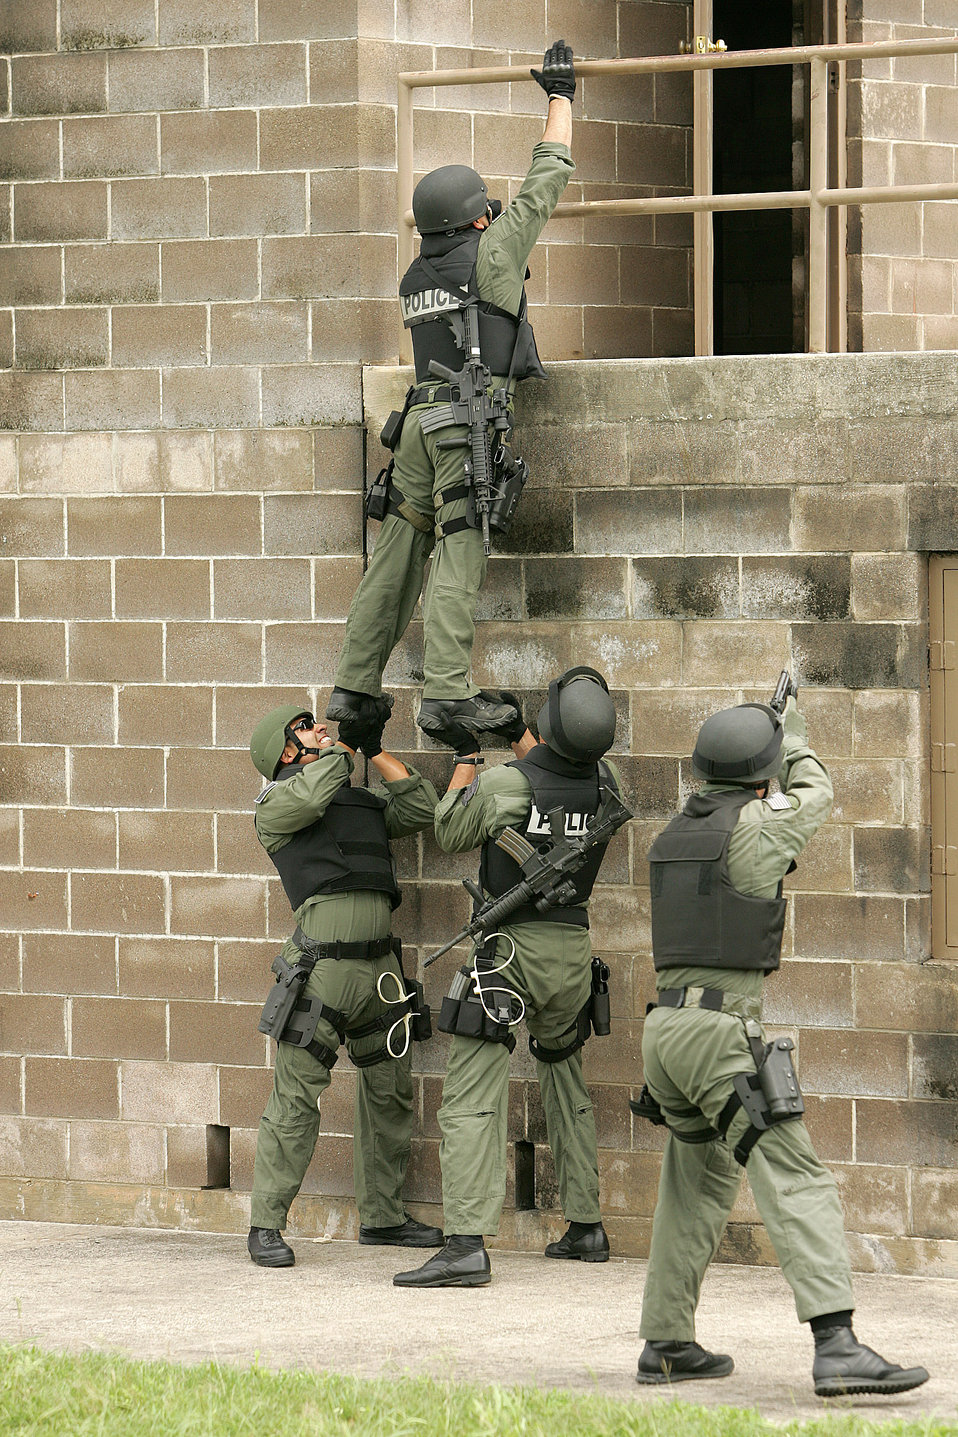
Go ahead, make my day

Members of the 37th Training Wing's Emergency Services Team use a team lift technique to enter a target building during training May 4 at Lackland Air Force Base, Texas. A five-man team consisting of 1st Lt. Stephen Addington, Senior Master Sgt. Matt Harmatuk, Tech. Sgt. Jason Attinger, Tech. Sgt. Justin King and Senior Airman Andrew Caro competed in the Southeast Texas SWAT Competition April 24 in Beaumont, Texas. Lackland AFB's team took a first place in the competition.